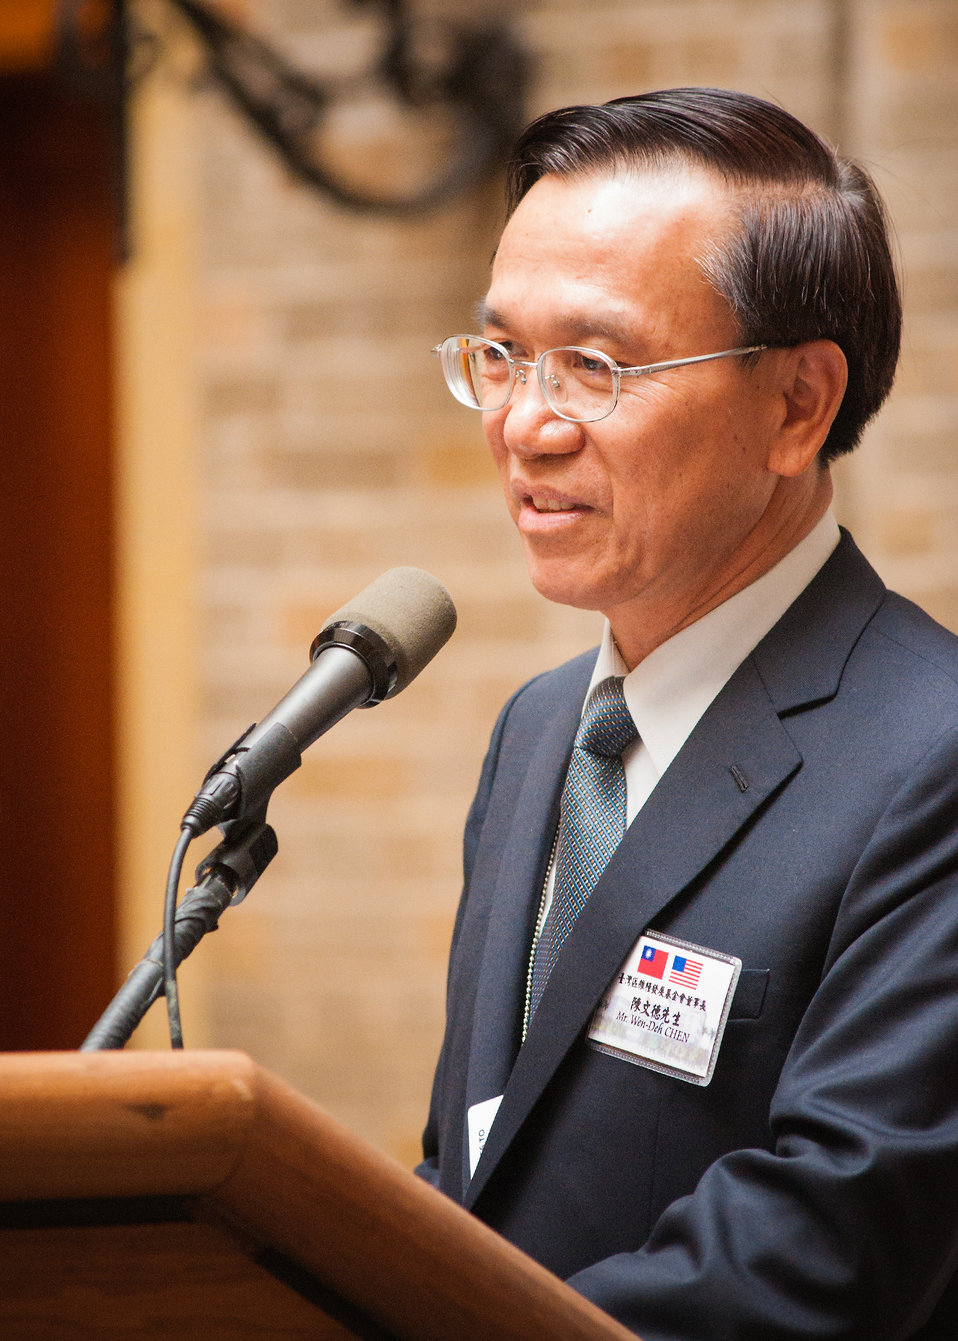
Wen-Deh Chen, President of Taiwan Grains and Feed Development Foundation and Vice Minister, Taiwan Council of Agriculture welcomes representatives of the Taiwan 2013 Goodwill Trade Mission visiting the United States Department of Agriculture in Washington, DC, Mon. Sept. 9, 2013.